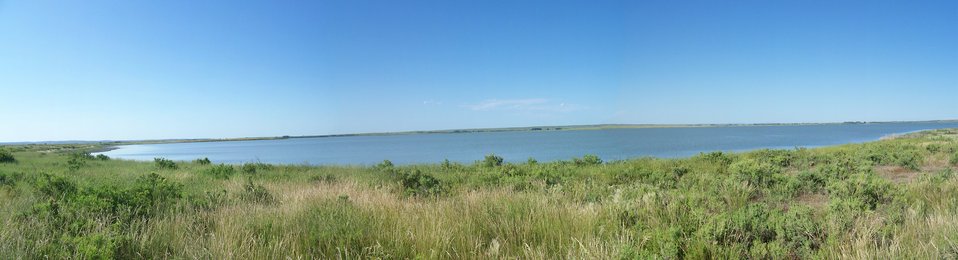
Lake Bowdoin

Lforth east shore of Lake Bowdoin, Bowdoin NWR